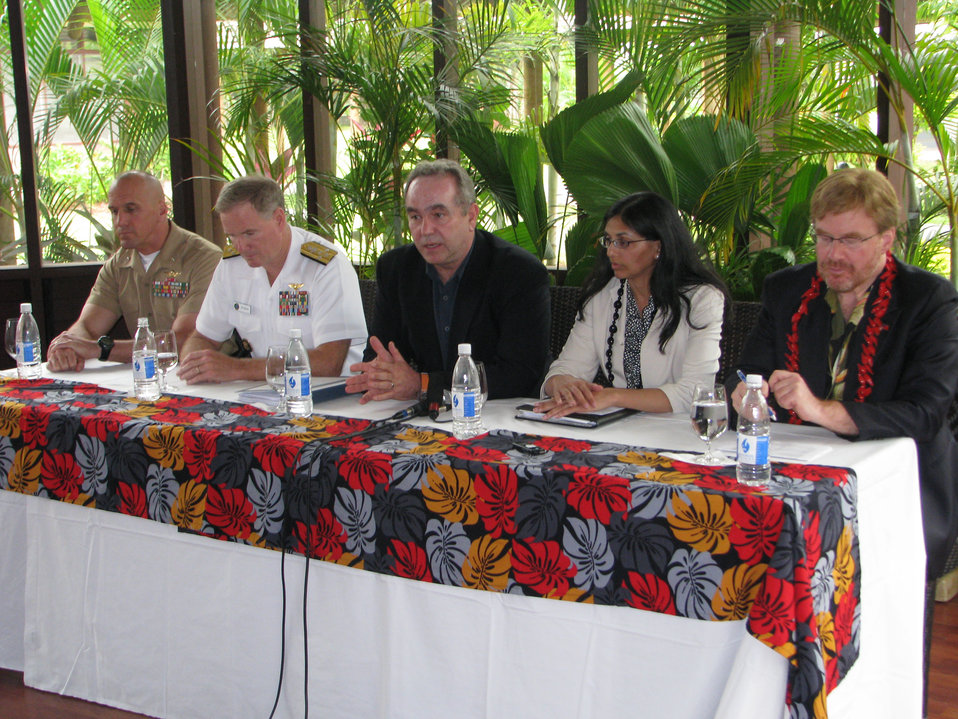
Assistant Secretary Campbell Speaks at a Press Conference in Samoa

Assistant Secretary for East Asian and Pacific Affairs Kurt Campbell, center, speaks during a press conference at the conclusion of his visit to Apia, Samoa, on June 27, 2011. Assistant Secretary Campbell is leading a delegation, which includes Adm. Patrick Walsh, commander of U.S. Pacific Fleet, second from left, Office of the Secretary of Defense South/Southeast Asia Principal Director Brig. Gen. Richard Simcock, left, and U.S. Agency for International Development (USAID) Assistant Administrator Nisha Biswal, second from right, on a visit to nations throughout the South Pacific to engage in discussions to enhance bilateral political, economic, and security relations in the region. Joining the delegation in Samoa is U.S. Ambassador to New Zealand and Samoa, David Huebner, right.